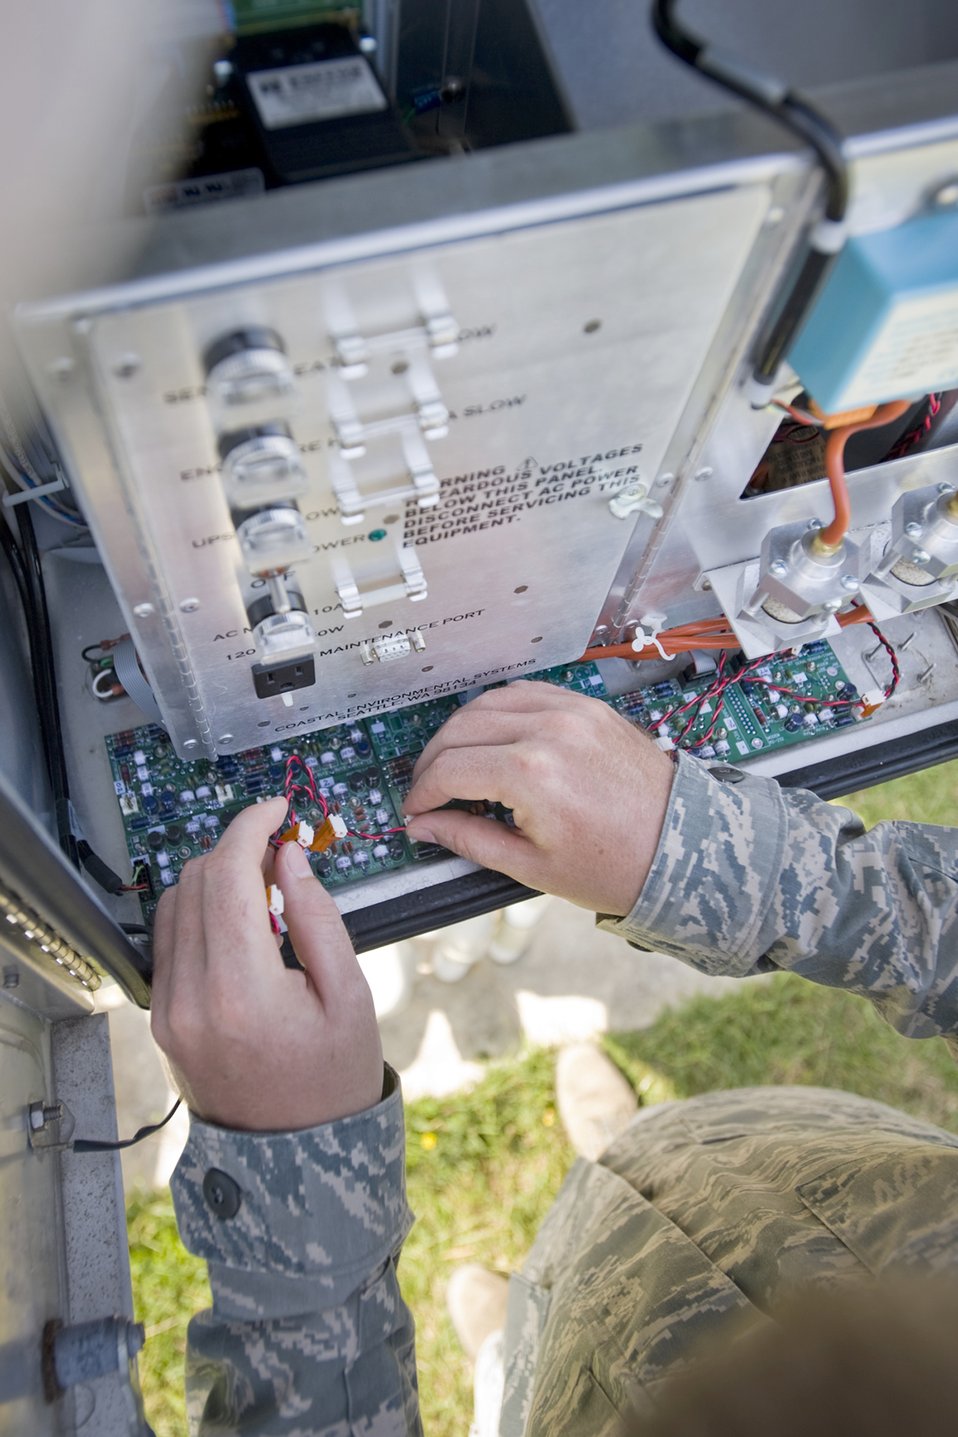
Maintaining an automatic observation system

Staff Sgt. James McGrath conducts maintenance on an automatic observation system on the flightline Aug. 17, 2010, at Misawa Air Base, Japan. The station collects and reports data on weather including temperature, wind speed and direction, atmospheric pressure, precipitation, lightning and thunderstorms. Airman McGrath is an airfield systems maintenance technician with the 35th Communications Squadron.